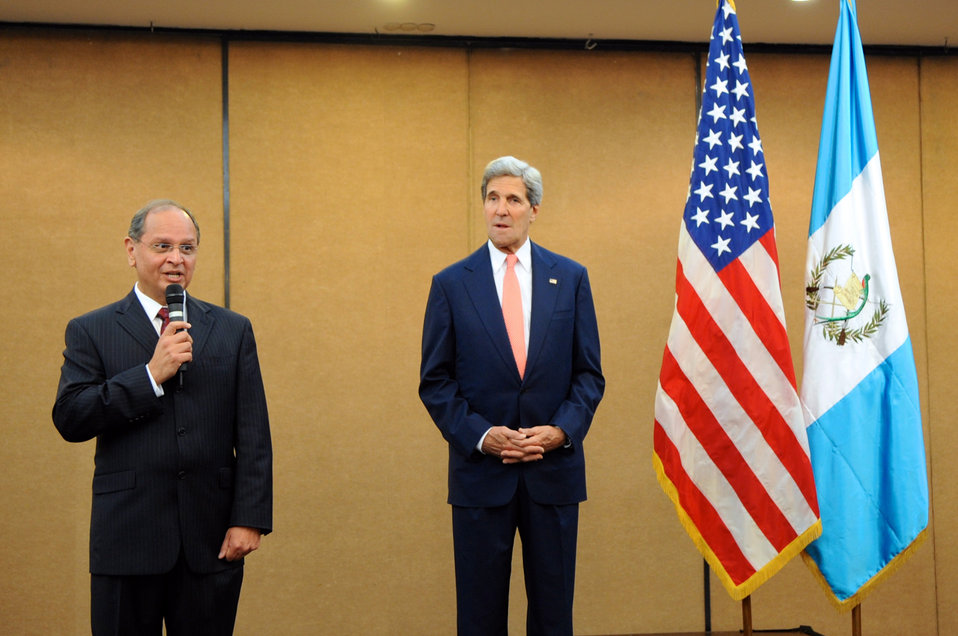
Ambassador Chacon Introduces Secretary Kerry

U.S. Ambassador to Guatemala Arnold Chacon introduces U.S. Secretary of State John Kerry to the staff from the U.S. Embassy in Guatemala City, Guatemala, on June 5, 2013. Secretary Kerry is in Antigua, Guatemala, for the General Assembly of the Organization of American States Plenary Session.